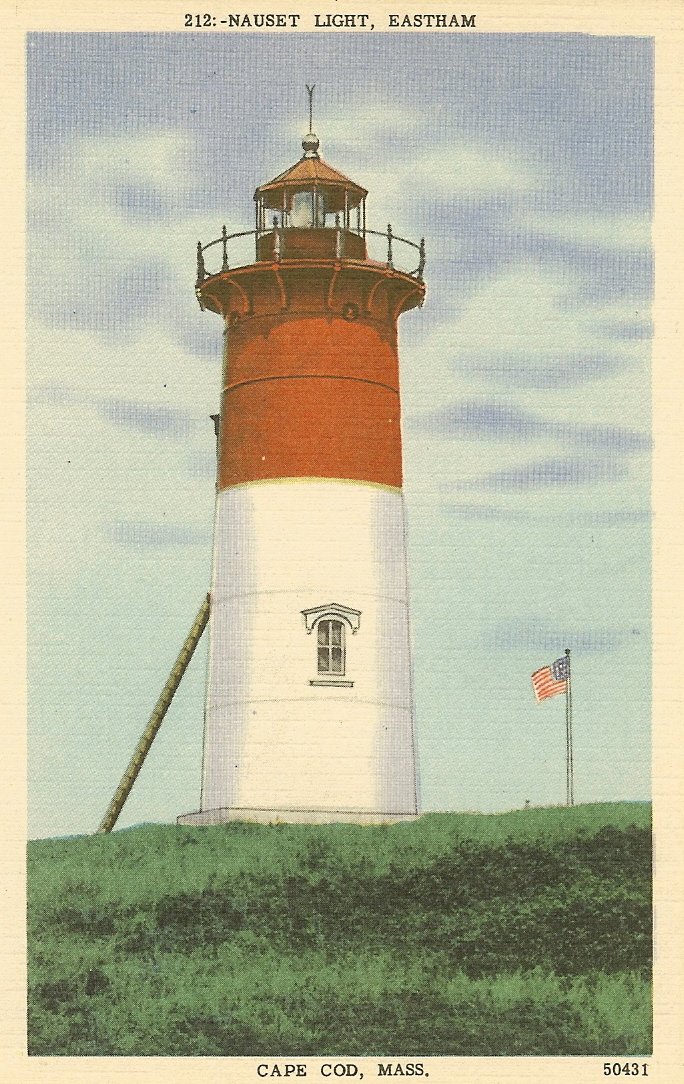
Nauset Light